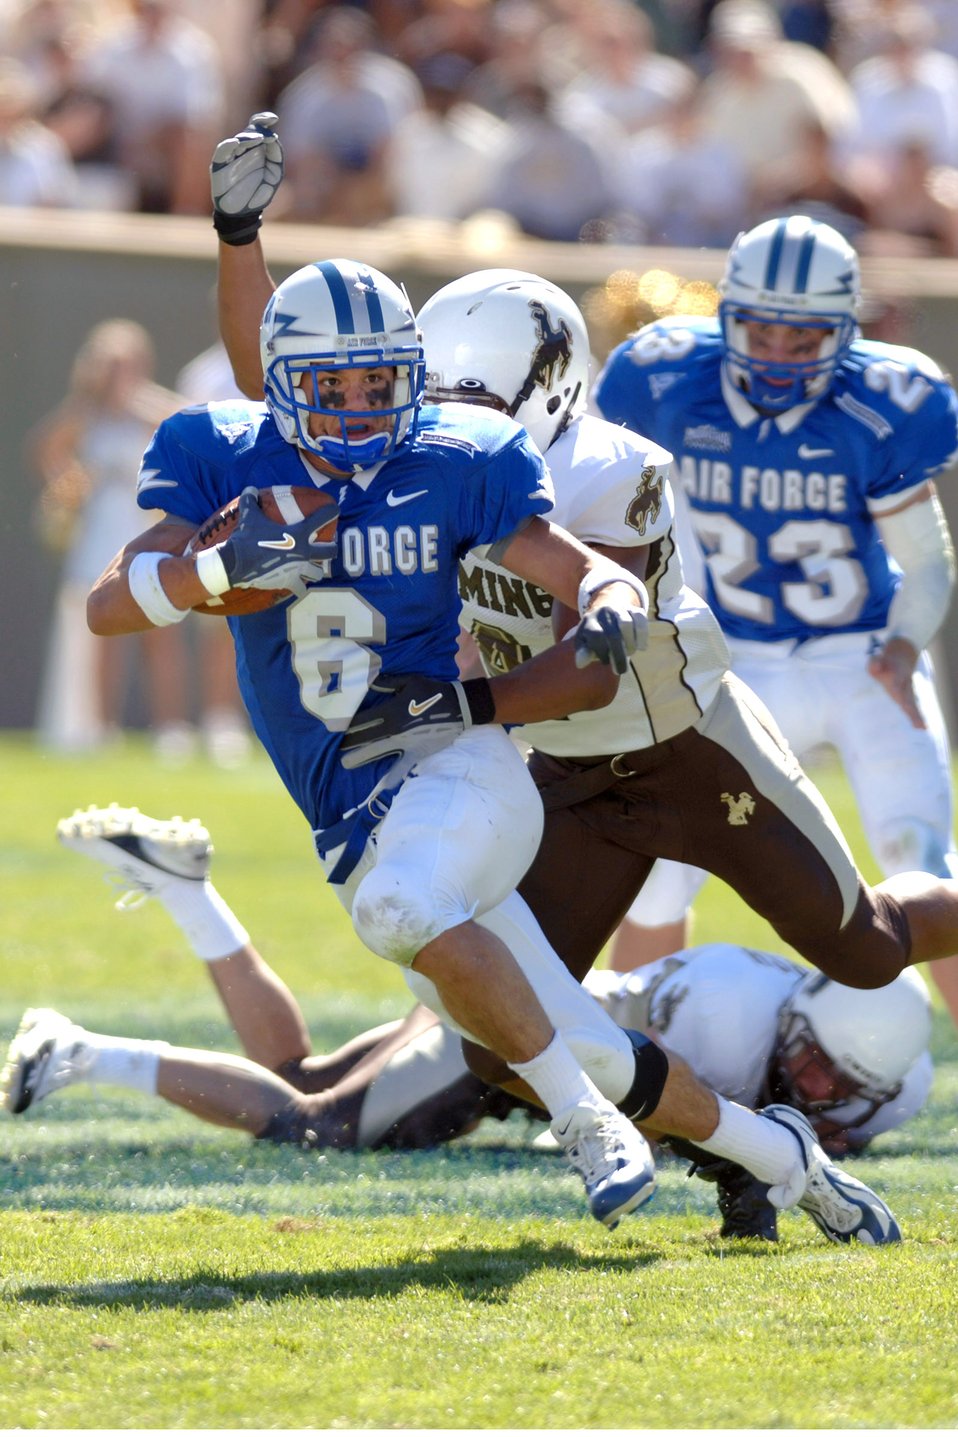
Falcons set to recapture Commander-in-Chief's Trophy

Senior cornerback Chris Sutton, 6, and his Falcon teammates are determined to make every play count in the 2006 season. Air Force has finished in the top five in offensive rushing nearly every year for the past two decades, and the team has no plans of making this season an exception.